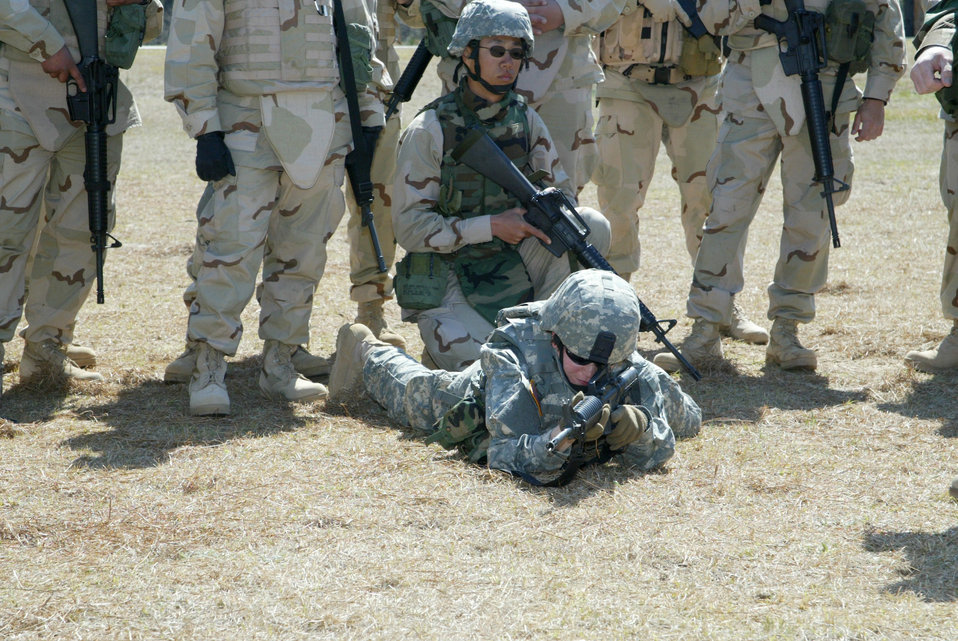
Provincial reconstruction team training

Army Spec. Danielle Bayar demonstrates a high crawl at a training site on Fort Bragg, N.C.